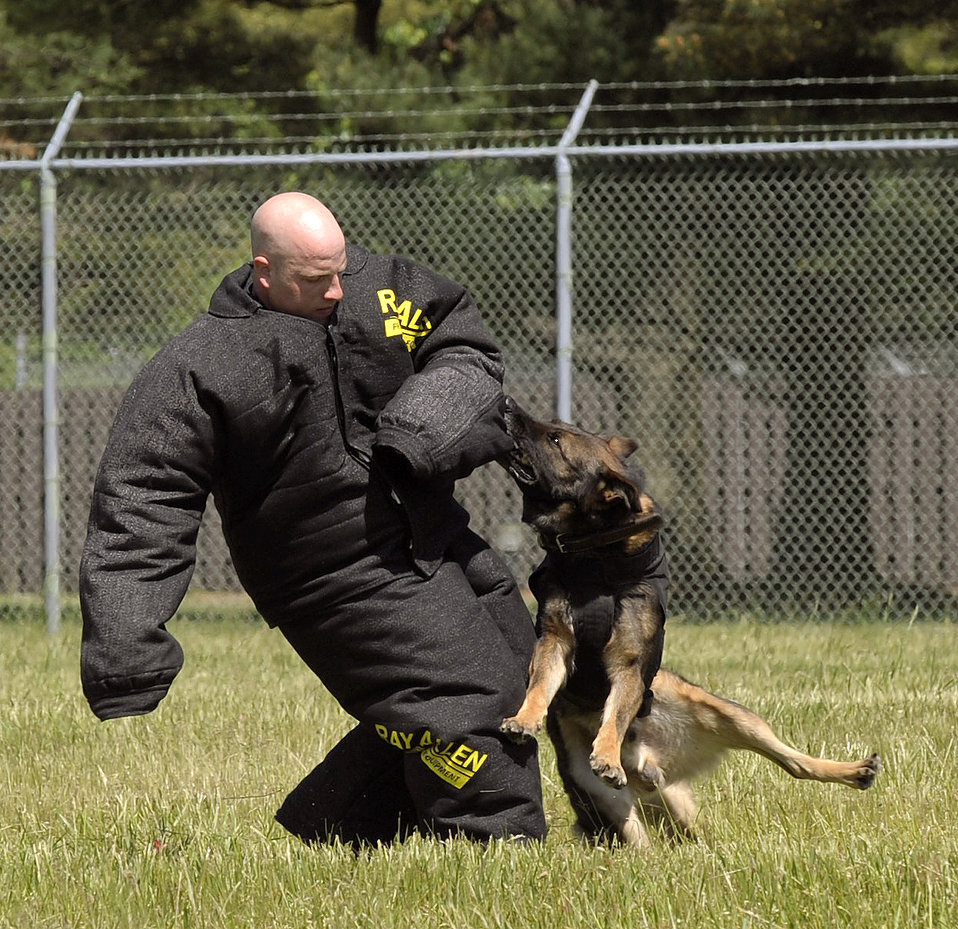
You're going down...

A military working dog attacks Senior Airman Sean Schwartz during the handler protection competition May 13, 2010, at Joint Base McGuire-Dix-Lakehurst, N.J. The dogs are trained to tackle a fleeing suspect and hang on to them until a police officer arrives on the scene. Airman Schwartz is a military working dog handler with the 87th Security Forces Squadron.